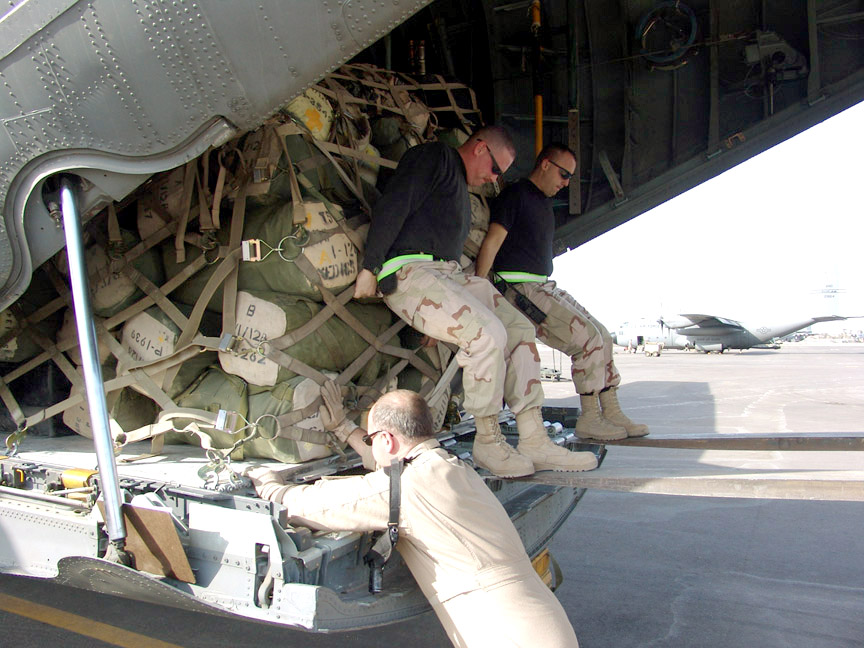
Loader in waiting

SOUTHWEST ASIA -- (From left) Master Sgt. Dean Cook, Staff Sgt. Robert Alexander and Senior Airman Robert Charron push a pallet into position aboard a C-130 Hercules before a flight into Iraq. The Airmen are assigned to the 386th Air Expeditionary Wing at a forward-deployed location providing tactical airlift supporting Operation Iraqi Freedom. Sergeant Cook is a loadmaster assigned to the 746th Expeditionary Airlift Squadron. Sergeant Alexander and Airman Charron are assigned to the 386th Expeditionary Logistics Readiness Squadron.